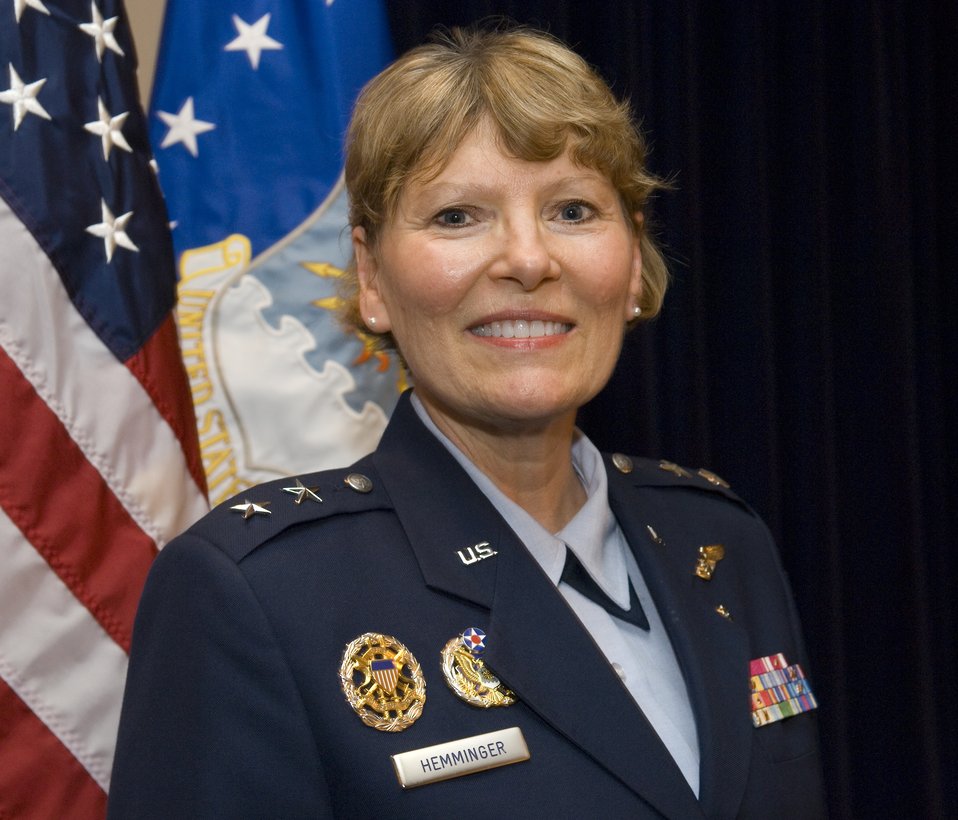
Female leaders from Omaha, Air Force gather at Offutt

Maj. Gen. Linda S. Hemminger met with female leaders in Omaha at the Ten Dinner Aug. 14 in the Patriot's Club at Offutt Air Force Base, Neb. General Hemminger is mobilization assistant to the deputy surgeon general of the Air Force.